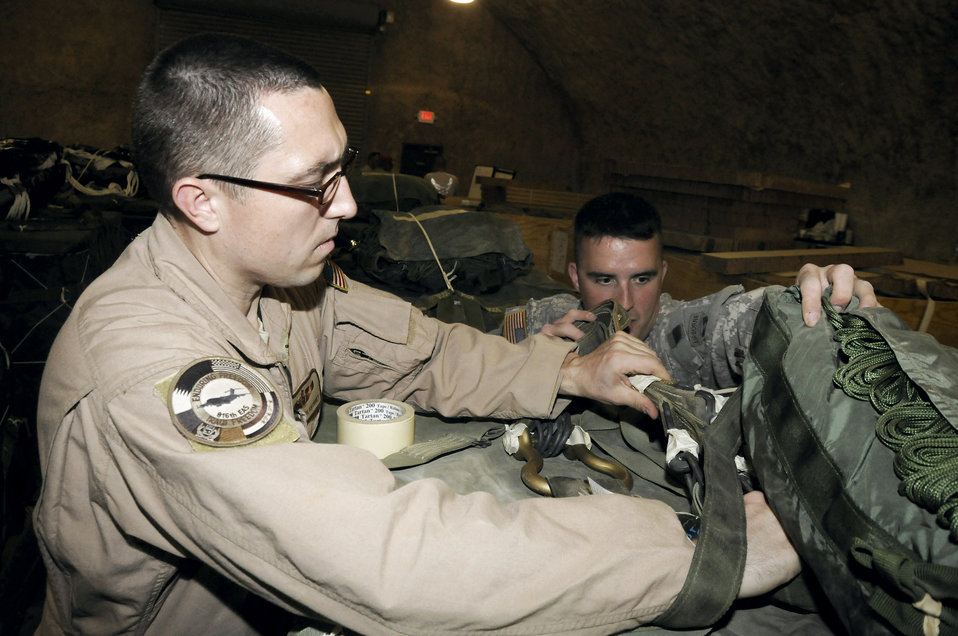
Operations Iraqi Freedom, Enduring Freedom and Joint Task Force-Horn of Africa

Tech. Sgt. Keith Hackney and Army Sgt. Joshua Sheptock perform a joint inspection Dec. 6 at an air base in Southwest Asia to ensure a container delivery system was rigged correctly so it can be used to drop supplies in the area of responsibility. Sergeant Hackney is a C-17 Globemaster III joint airdrop inspector and is assigned to the 816th Expeditionary Airlift Squadron. Sergeant Sheptock is a parachute rigger assigned to the 824th Riggers.